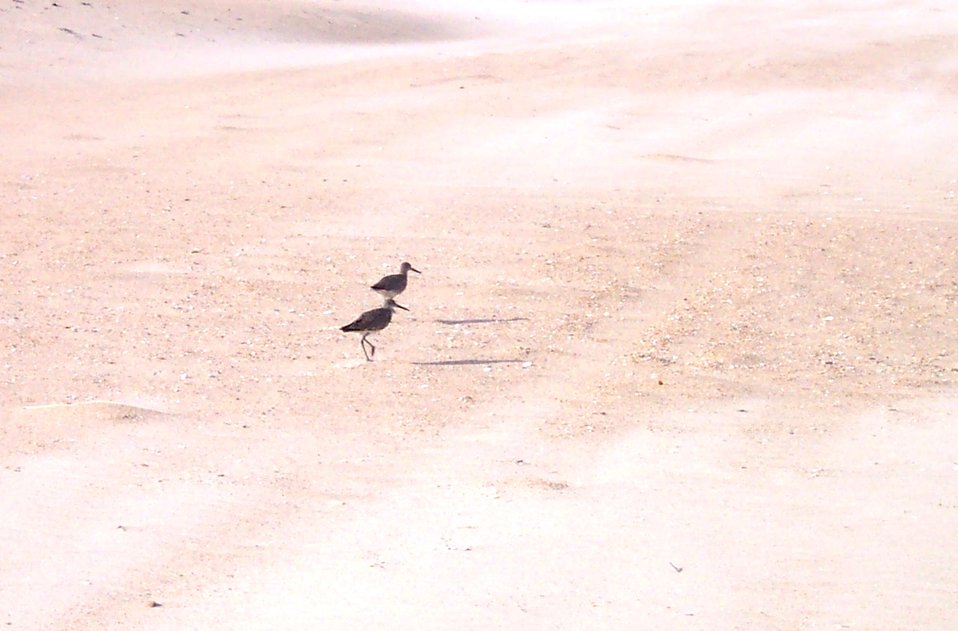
Shore birds at Cape Hatteras National Seashore.